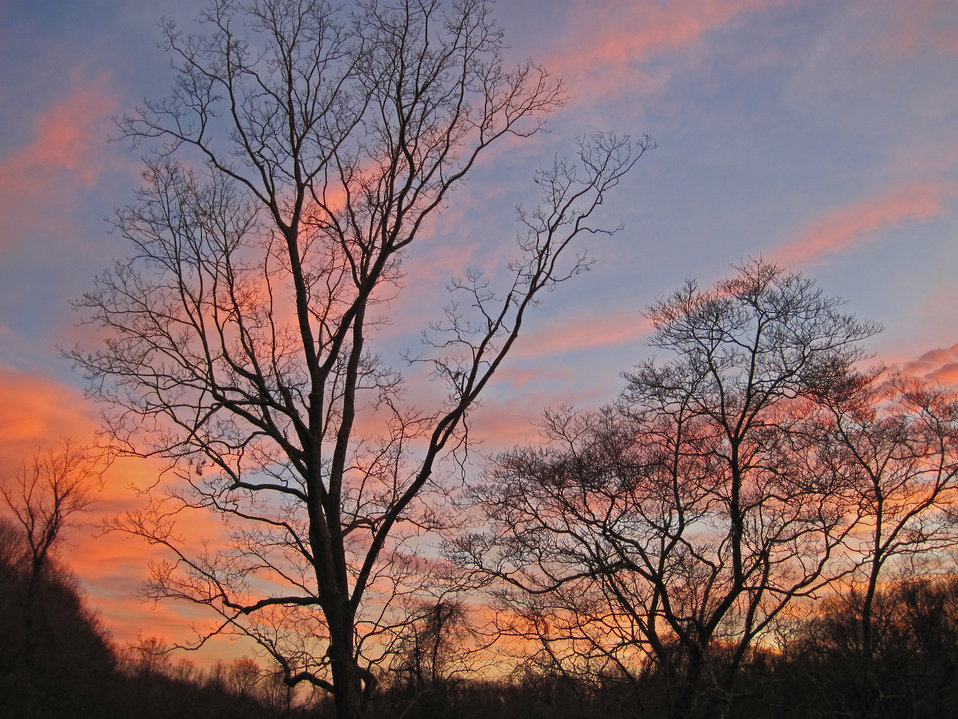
Sunset at Salt Meadow

Stewart B. McKinney National Wildlife Refuge, CT.